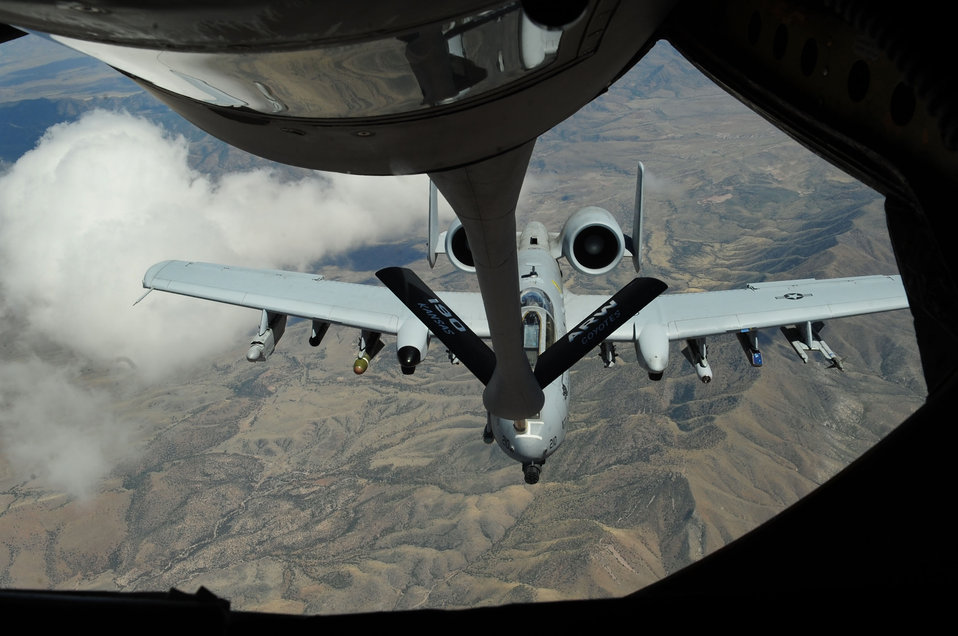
A-10C airborne refueling

A KC-135 Stratotanker from the Kansas Air National Guard's 117th Air Refueling Squadron, based out of Forbes Field, Kan., refuels an A-10C Thunderbolt II April 27, 2010, from the 355th Fighter Wing at Davis-Monthan Air Force Base, Ariz. The tanker crew supported refueling missions throughout the week so students enrolled in the A-10C Pilot Initial Qualification Course could accomplish their first air-to-air refueling.